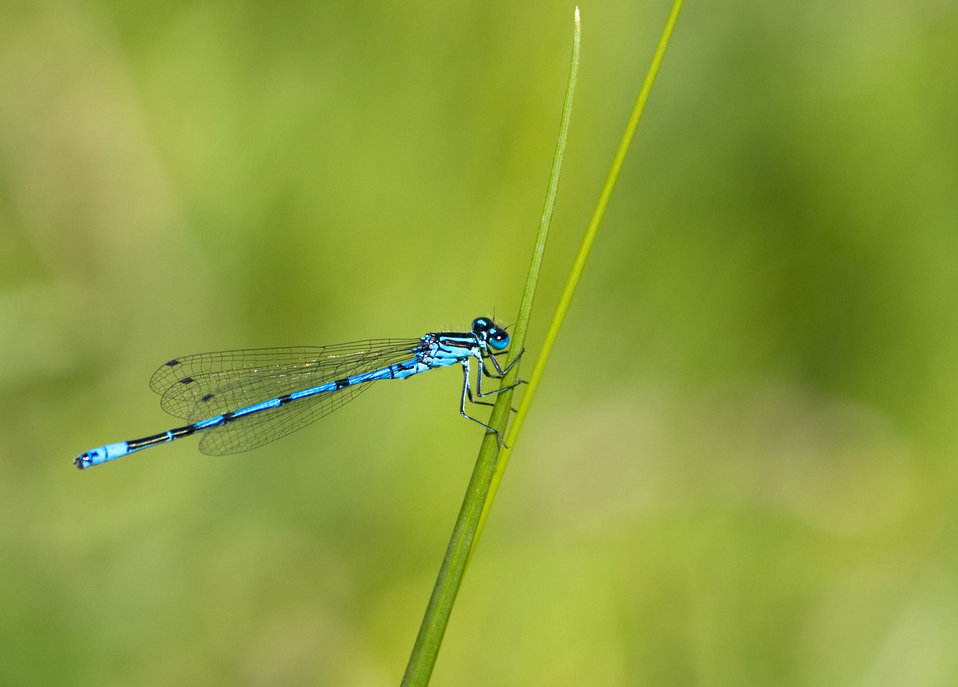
Dragonfly or damselfly

Beautiful close-up image of a blue dragonfly or damselfly.